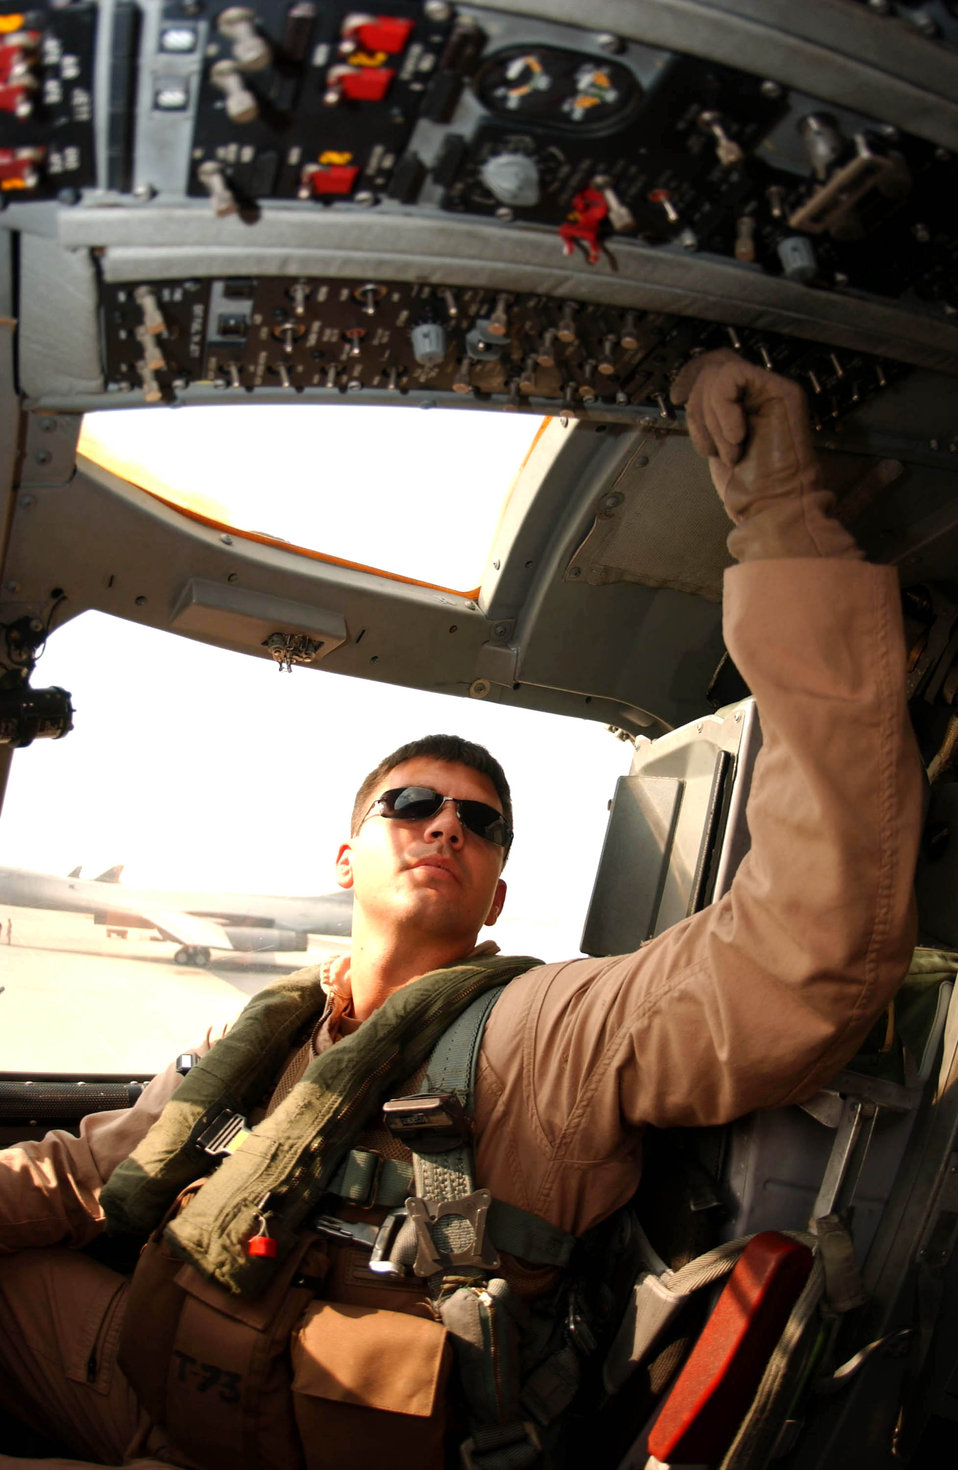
B-1B Lancer air crew

Capt. David Grasso, a B-1B Lancer pilot performs a pre-fight check recently before flying a 12-hour nighttime close-air support mission over Afghanistan. Captain Grasso is assigned to the 37th Expeditionary Bomb Squadron, part of the 379th Air Expeditionary Wing in Southwest Asia.